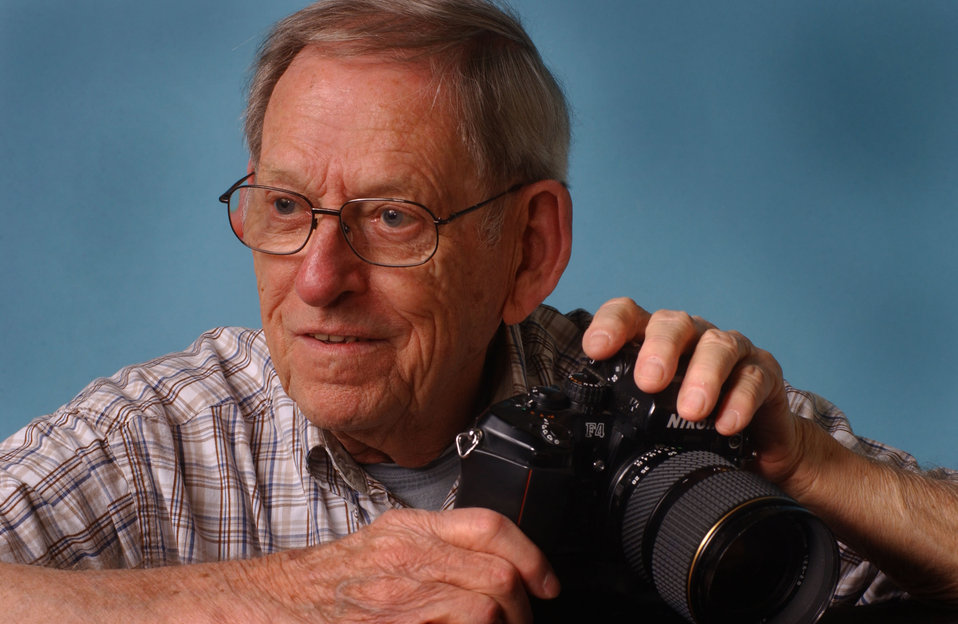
AEC Manhattan photographer Ed Westcott Oak Ridge

05-137a DOE photo by Lynn Freeny
AEC Manhattan photographer Ed Westcott Oak Ridge Tennessee 2005